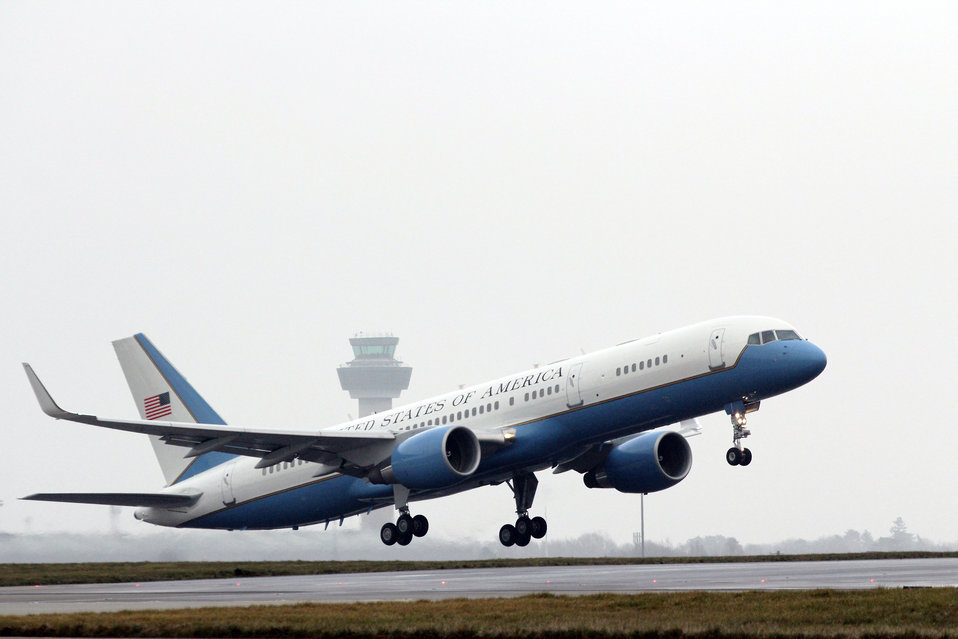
Secretary Kerry Departs London

U.S. Secretary of State John Kerry departs the United Kingdom en route to the Republic of Korea after participating in the G8 ministerial meetings in London, United Kingdom, April 11, 2013.